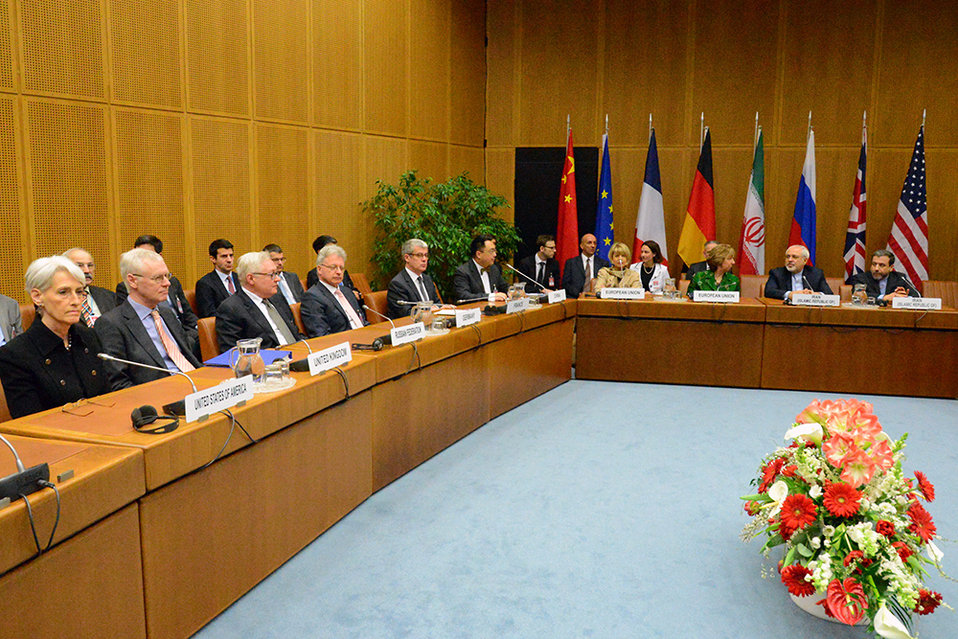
Under Secretary Sherman Participates in the P5 1 Talks on Iran's Nuclear Program

Under Secretary for Political Affairs Wendy Sherman participates in the P5 1 talks on Iran's nuclear program in Vienna, Austria, on April 8, 2014.